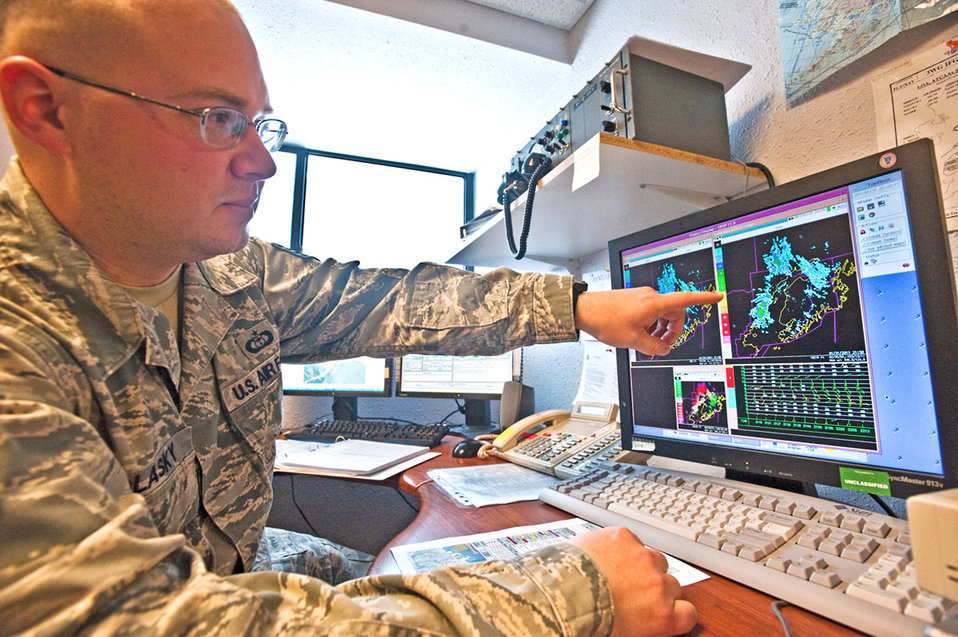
Weather team provides reports for mission

Staff Sgt. Raymond Polasky points out changes in weather patterns on radar, Feb. 9, 2011, at Joint Base Elmendorf-Richardson, Alaska. The weather flight uses tools like weather sensors, satellites and radar to accurately forecast for eight different airframes. Sergeant Polasky is assigned to the 3rd Operational Support Squadron.